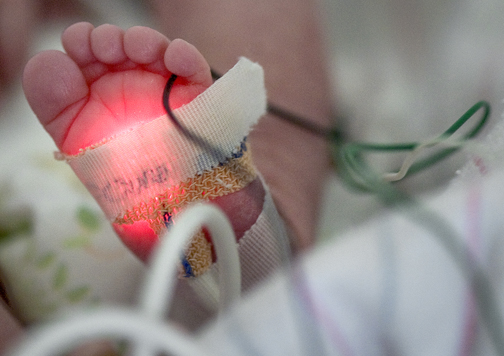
Neonatal Intensive Care Unit

A newborn is admitted to the Level 2 area of the Neonatal Intensive Care Unit at the Wilford Hall Medical Center on Lackland Air Force Base, Texas. The Level 2 area is for babies that are born prematurely or ill and require specialized neonatal care.